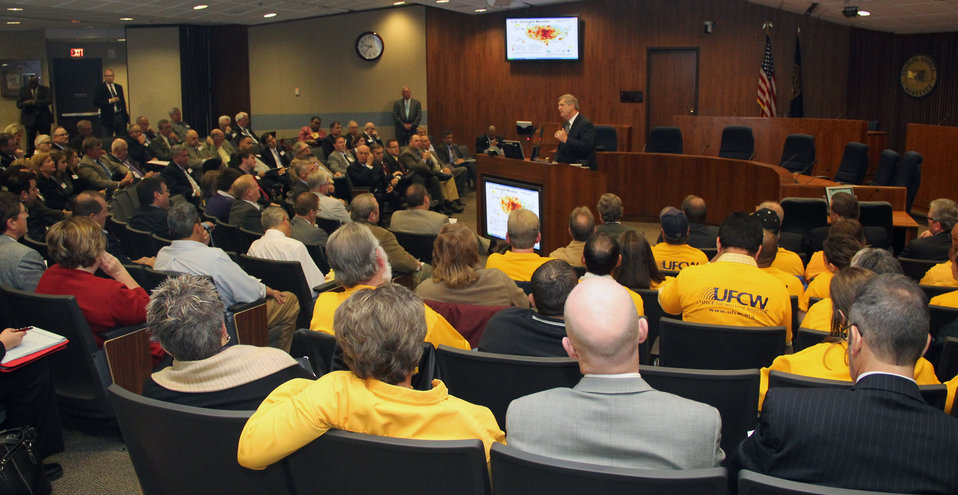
Agriculture Secretary Tom Vilsack speaks at the opening session of a Federal Drought Workshop in Omaha, NE on Tuesday, Oct. 9, 2012. This was the first of four regional workshops to outline resources available to assist with drought recovery effort. Secretary Vilsack indicated that President Obama had directed federal agencies to take every possible step to help farmers and ranchers, businesses, and rural communities recover as a result of one of the country's worst droughts in decades. The U.S. Department of Agriculture (USDA) is partnering with local, state and federal partners to hold the workshops, working closely with the Department of Commerce, the Small Business Administration and the Federal Emergency Management Agency to facilitate these meetings.